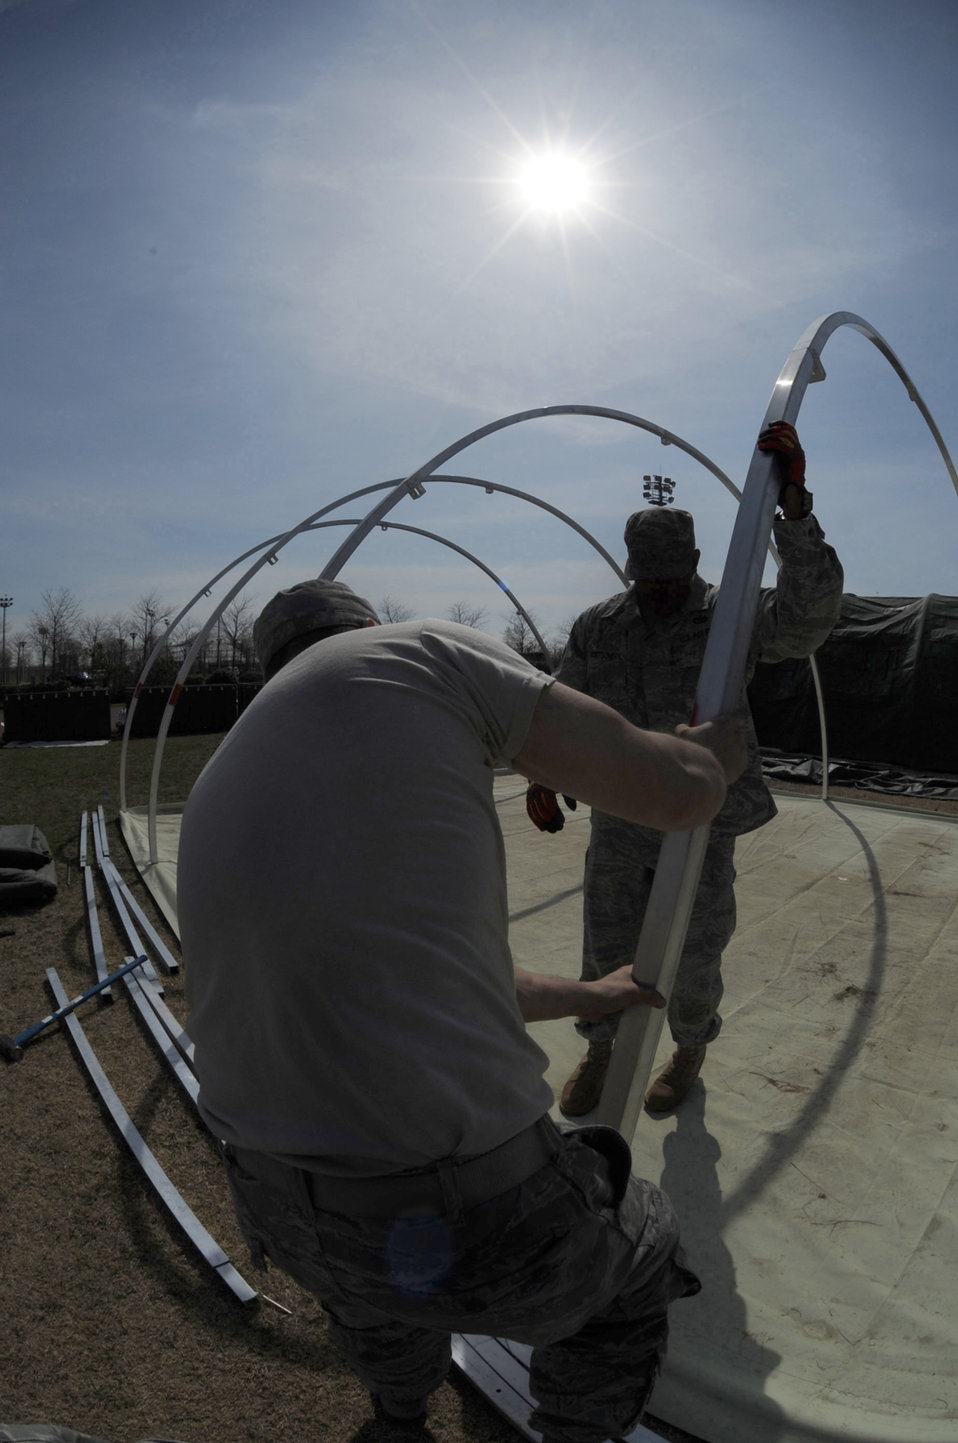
Setting up a tent city

Airmen from multiple U.S. Air Forces in Europe civil engineer squadrons assemble tents March 22, 2011, at Aviano Air Base, Italy, to house contingency personnel arriving there in support of Operation Odyssey Dawn.